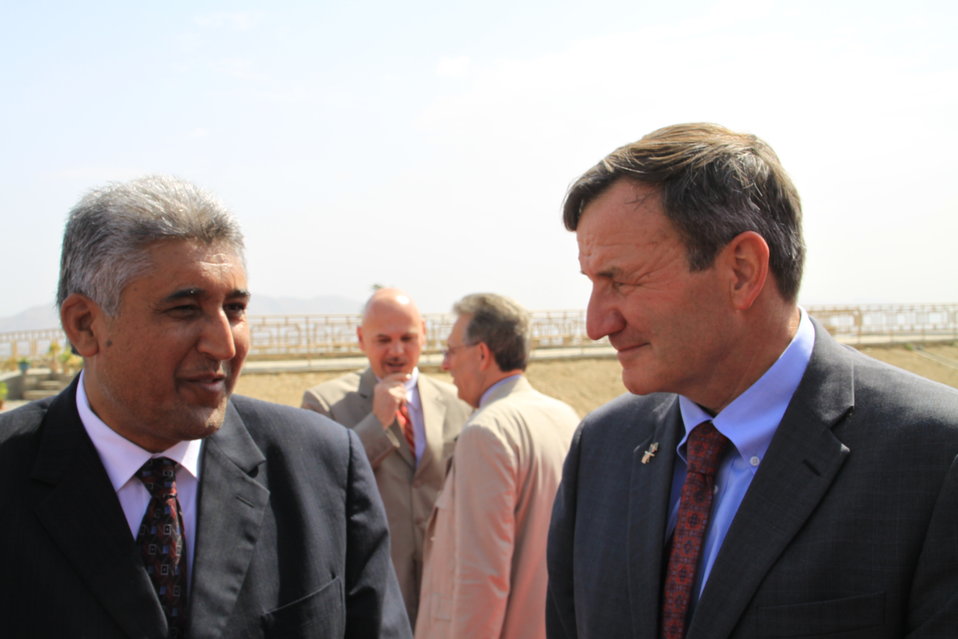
Badam Bagh Farm